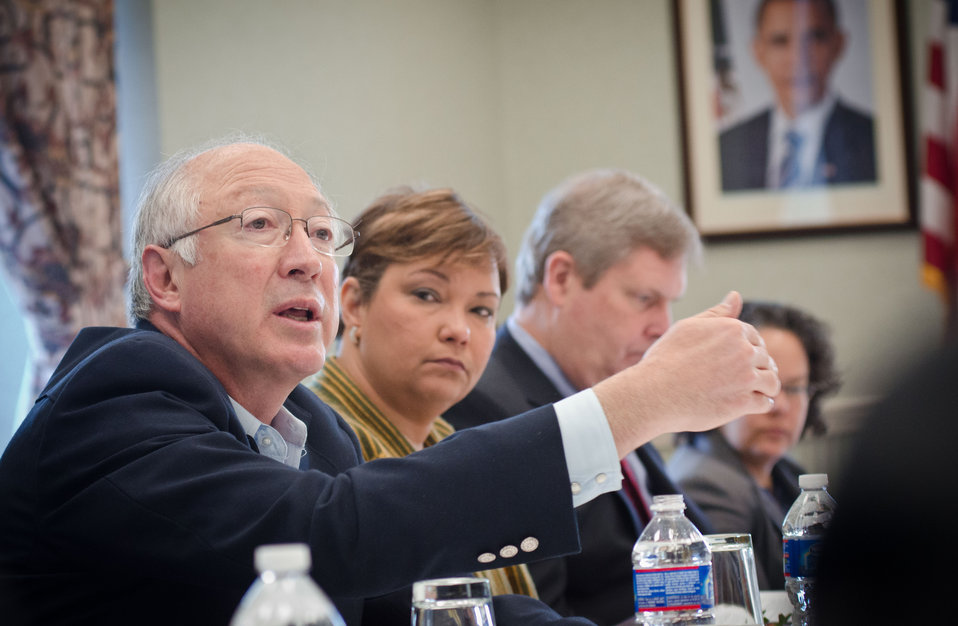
Interior Secretary Ken Salazar makes a comment during a breakfast for Western Governors and Federal Officials, in the Lincoln Room at the United States Department of Agriculture headquarters, in Washington, D.C., on Sunday, February 26, 2012.